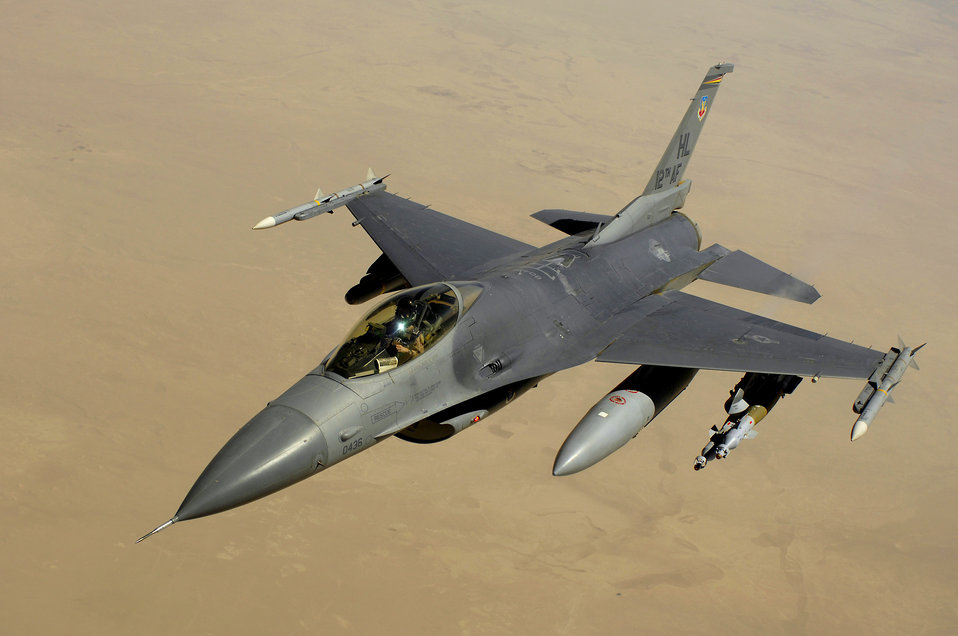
Oct. 6 airpower summary: F-16s conduct shows of force

An F-16 Fighting Falcon aircraft returns to the fight after receiving fuel from a KC-135 Stratotanker during a mission over Iraq. The F-16 is a compact, multirole fighter aircraft with high maneuverability.